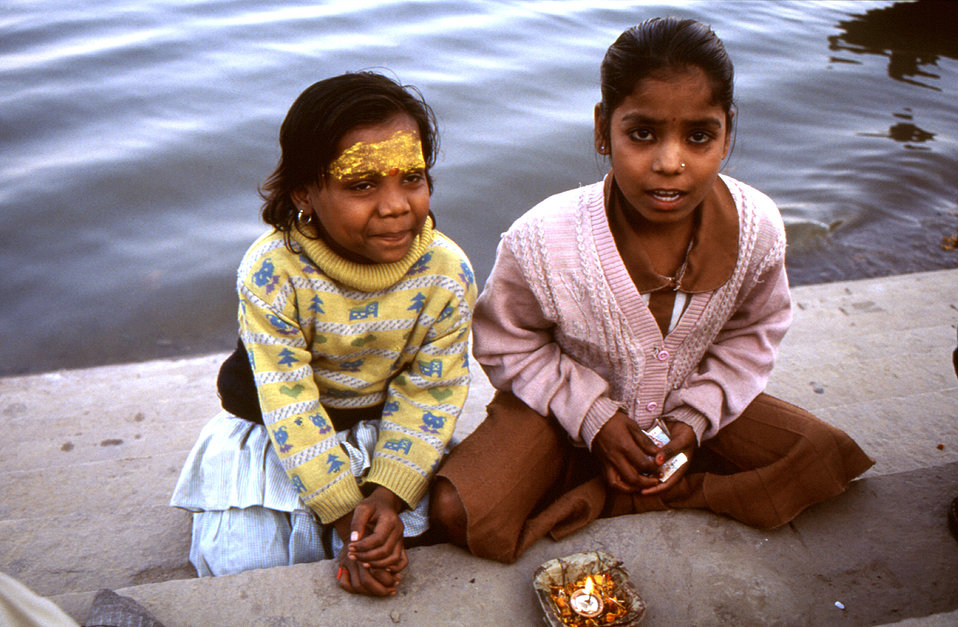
The Indian city of Varanasi is situated on the banks of the sacred Ganges River, and is one of the holiest places in India. On a daily basis, people frequent the steps, or ghats along the Ganges River. This image, captured in 2000, depicted two young girls kneeling at one of the river ghats, as they were lighting a prayer candle on the holy river bank.